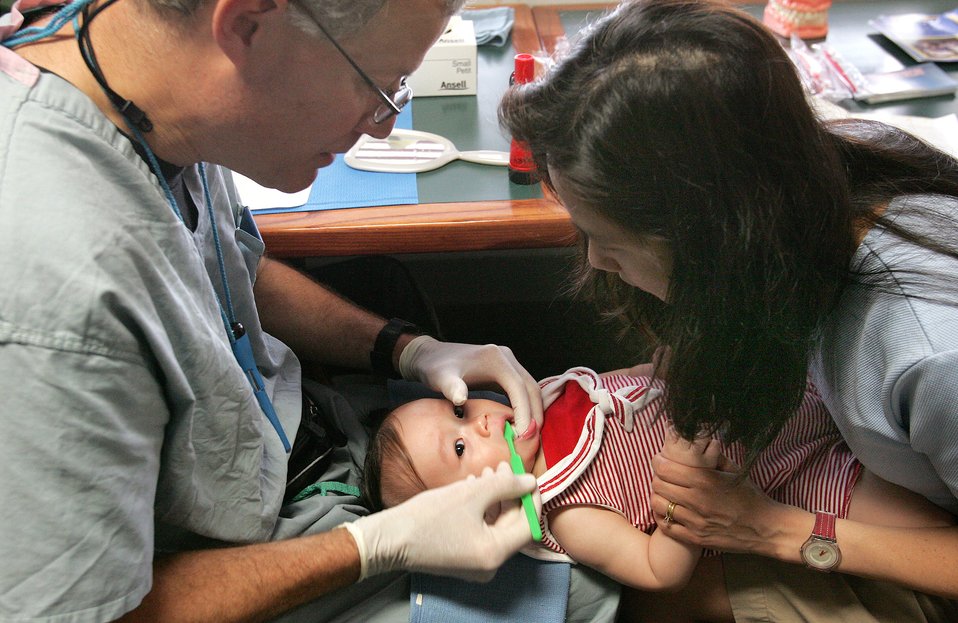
Good habits start early

Elena Nguyen holds her daughter, Lien-Huong, while Col. (Dr.) Jeffery Mabry brushes the infant's teeth at the Skylark Community Center at Lackland Air Force Base, Texas, on Wednesday, May 10, 2006. The pediatric dental department at Lackland provides drop-in dental screening as part of their pediatric dental training program. Colonel Mabry is director of pediatric dentistry with the 59th Dental Squadron.